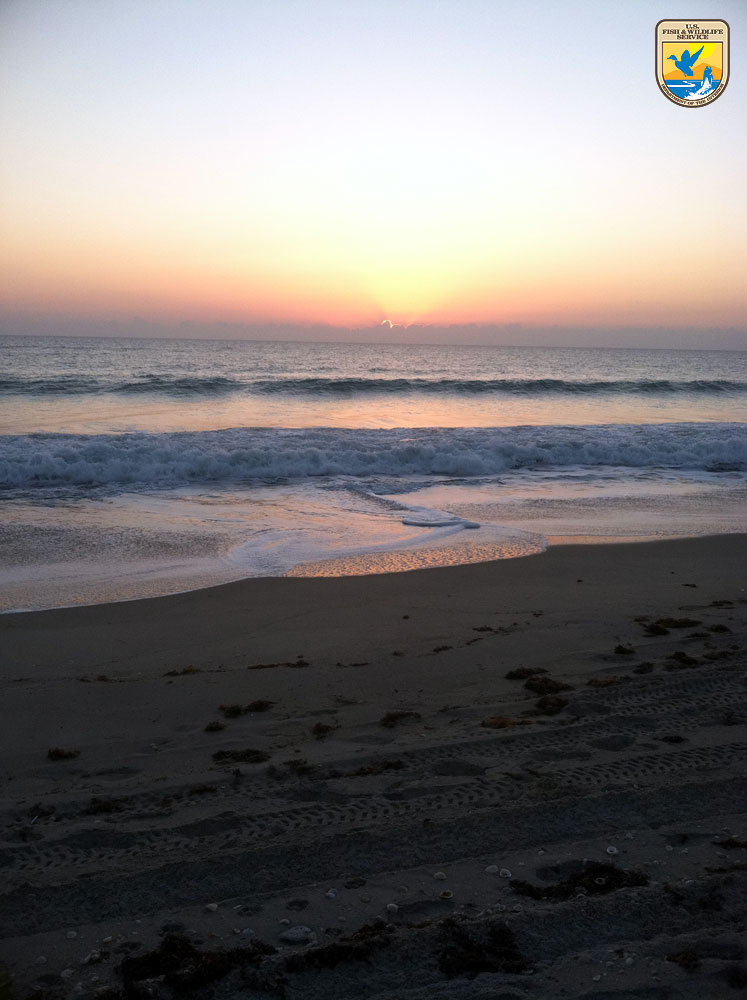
Sunrise - Region 4

The sun rises over Archie Carr National Wildlife Refuge